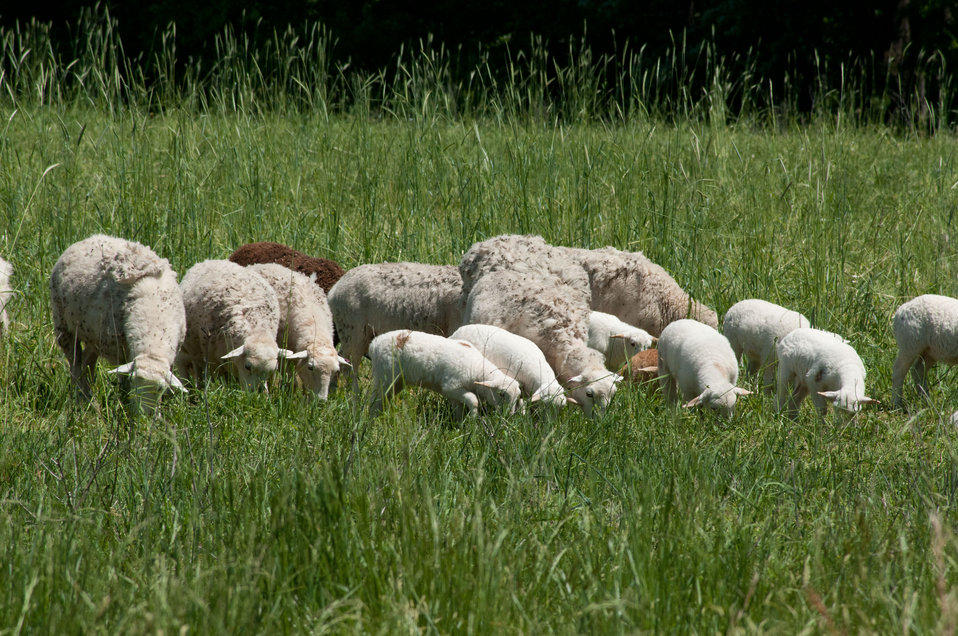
Hybrid sheep can survive solely on grass at the Tuckahoe Plantation, in the Richmond, VA area on Thursday, May 5, 2011. An electrified fence keep herd in the proper pastures where they graze on the grass and leave nutrient rich manure to revitalize the soil, enhancing regrowth. The plantation was the boyhood home of President Thomas Jefferson from 1745 until 1752, today it is a working farm with cattle, sheep, chickens and rabbits supplying meats to Fall Line Farms a local food hub. Fall Line Farms offers a wide variety of household food staples and specialty items on an ever changing inventory of fruits, vegetables, meats, soaps, eggs, cheeses, flowers, honey, pastas, sauces, syrups, baked goods, mushrooms, flour and grains. Suppliers post what they have on a Lulus Local Food online listing and customers make their selection. Every Thursday, suppliers team up to deliver customized orders to, one of several pick-up points, designated by the customer in or around the Richmond, VA area.